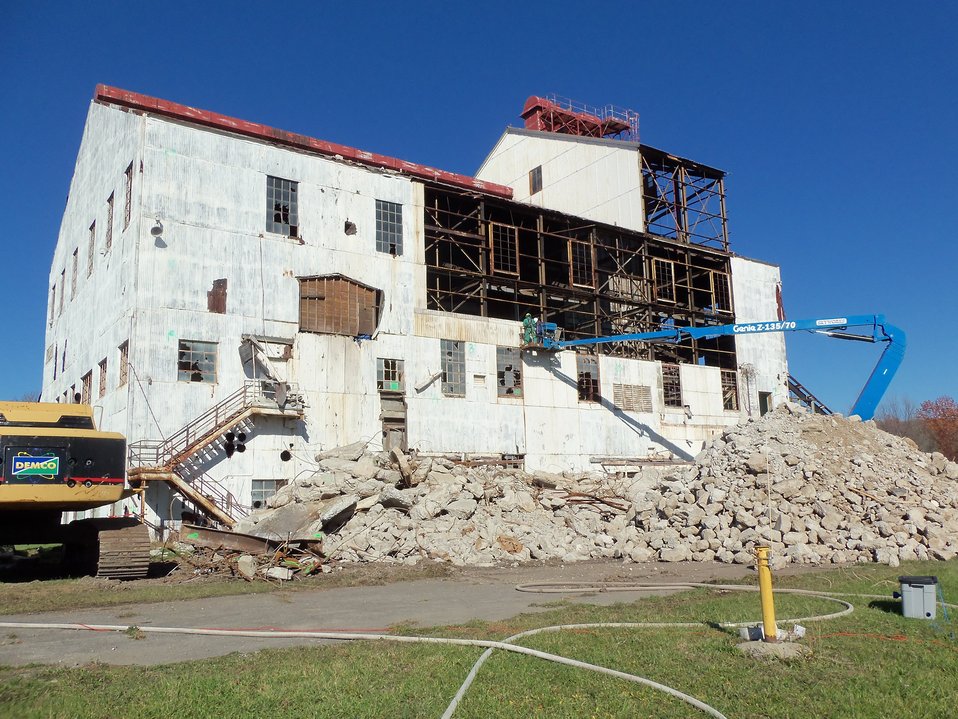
BLDG 401 SIDE OF BUILDING REMOVAL

Activities from the Niagara Falls Storage Site, which is associated with the former Lake Ontario Ordnance Works. Formerly Utilized Sites Remedial Action Program (FUSRAP), a program initiated in 1974 to identify, investigate and clean up or control sites that were part of the Nation's early atomic energy and weapons program. Activities at the sites that are eligible for FUSRAP were conducted by Manhattan Engineer District (MED) or the Atomic Energy Commission (AEC), both predecessors of the Department of Energy (DOE). The U.S. Army Corps of Engineers was assigned management of FUSRAP by Congress in 1997.